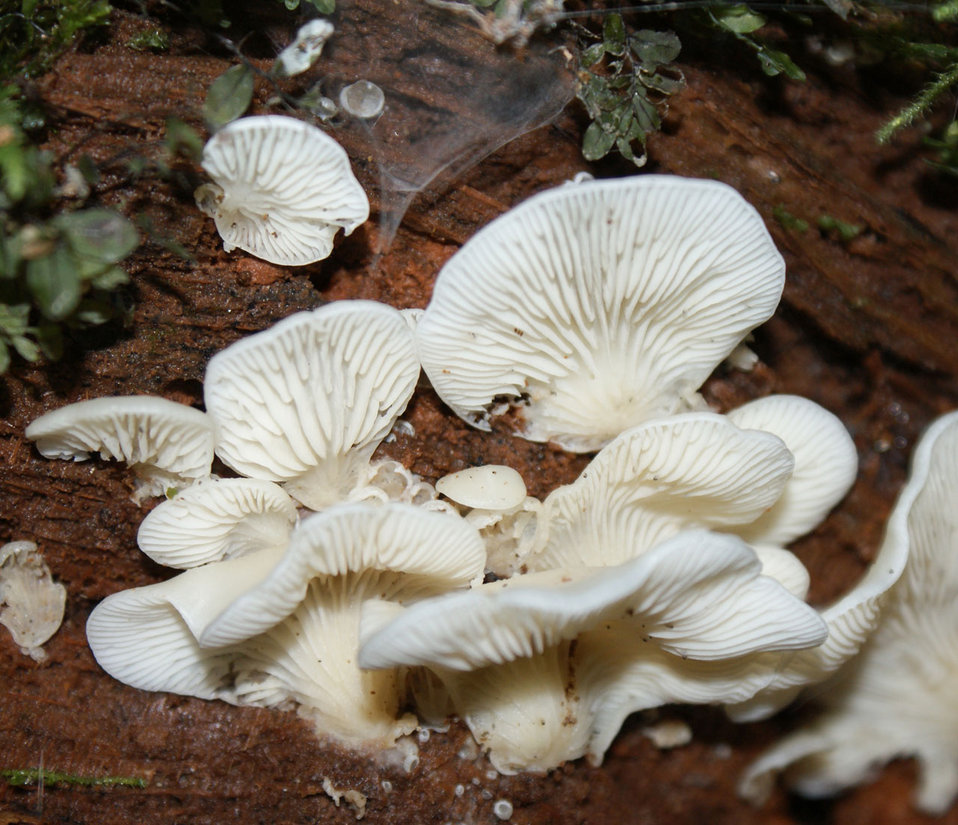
White fungi

Fungus growing on a downed tree in the quinault rain forest..